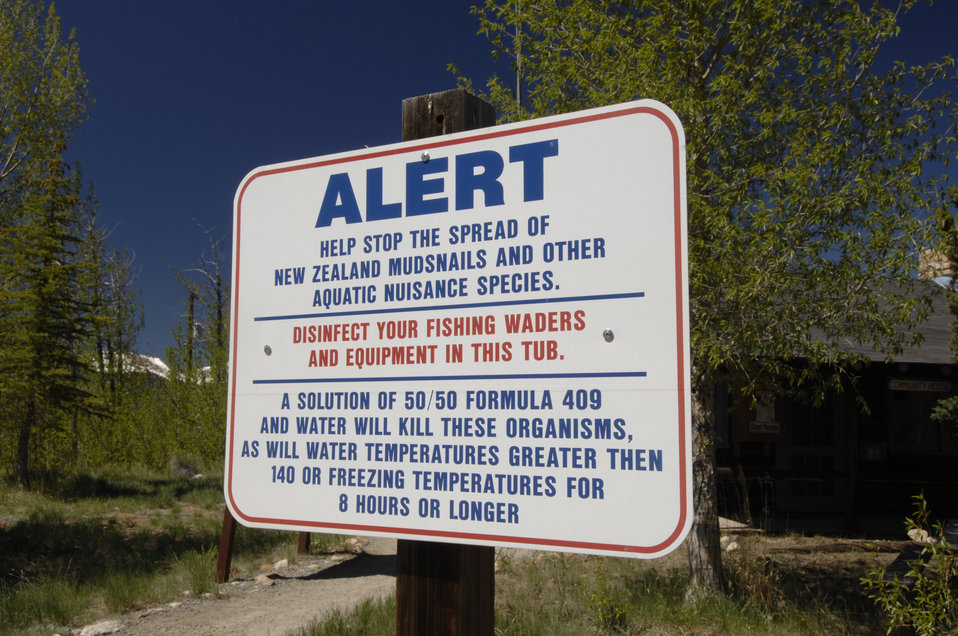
A sign posted in the San Isabel and Gunnison National Forests, Colorado on June 12, 2012 warns boaters about invasive aquatic species. A species is considered invasive it is nonnative to the ecosystem and its introduction causes or is likely to cause economic or environmental harm or harm to human health. The goal of the U.S. Department of Agriculture’s (USDA) Forest Service (FS) invasive species program is to reduce, minimize, or eliminate the potential for introduction, establishment, spread, and impact of invasive species across all landscapes and ownerships.